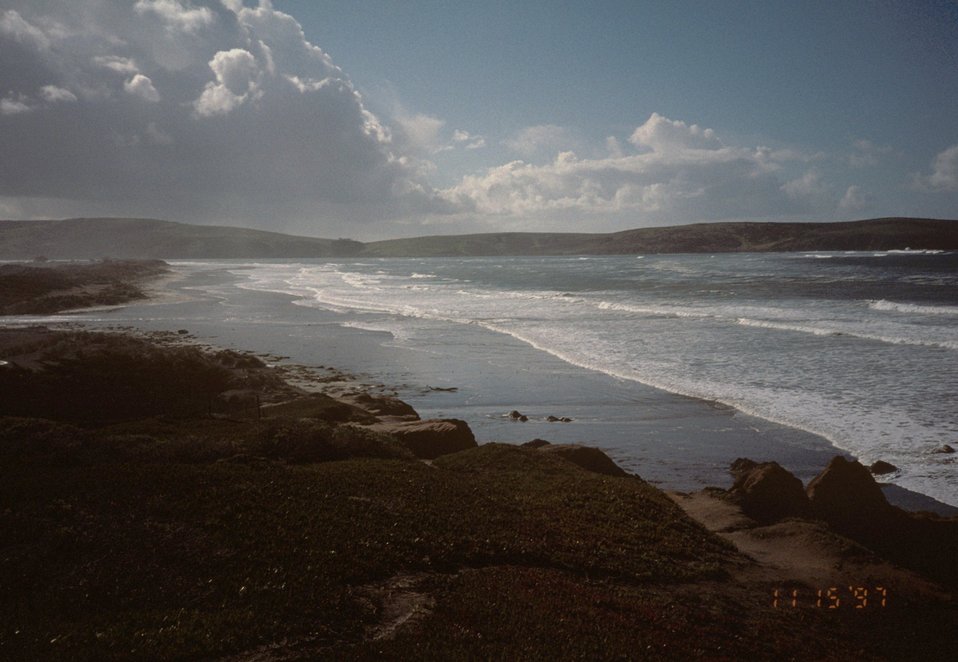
Dillon Beach